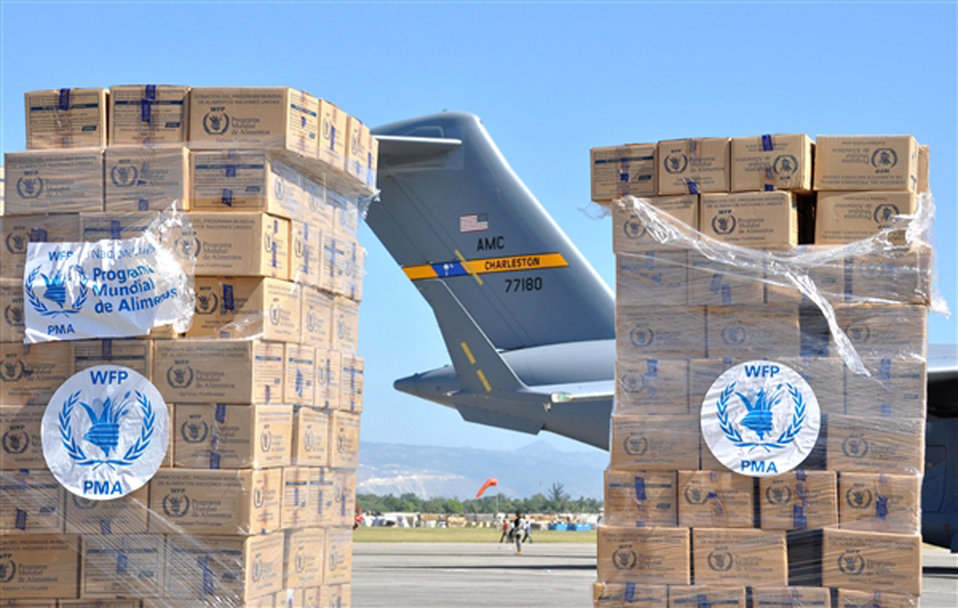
Joint Task Force members organize Haitian airport

Stacks of supplies shipped by the World Food Program to Haiti frame the tail of an Air Force C-17 Globemaster III transport Jan. 19, 2010, at the airport in Port-au-Prince, Haiti.